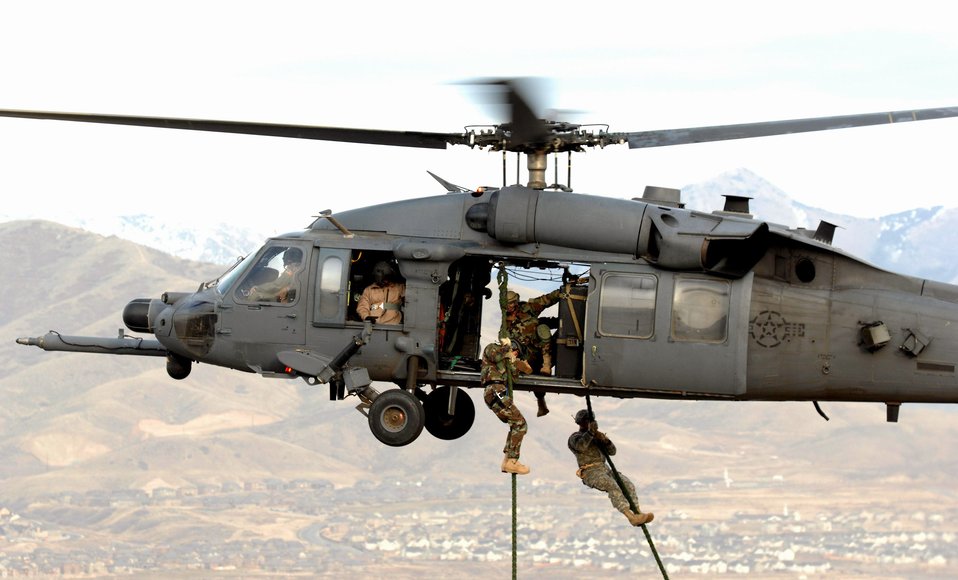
Combat search and rescue training in Utah

A Utah National Guard Soldier and 19th Special Forces member are lifted on board an HH-60 Pave Hawk during a combat search and rescue integration exercise Nov. 9 over the Utah Test and Training Range. Members of the 34th Weapons Squadron from Nellis AFB led the search and recovery training. The exercise expanded the integration with Utah's 211th Aviation Group AH-64 Apache Joint Rotary Wing, 4th Fighter Squadron F-16 Fighting Falcon assets from Hill AFB, Utah, and special operations forces. Exercise participants also conducted extensive joint combat search and rescue operations against surface-to-air threats. The exercise is being run held Nov. 6 through 15.